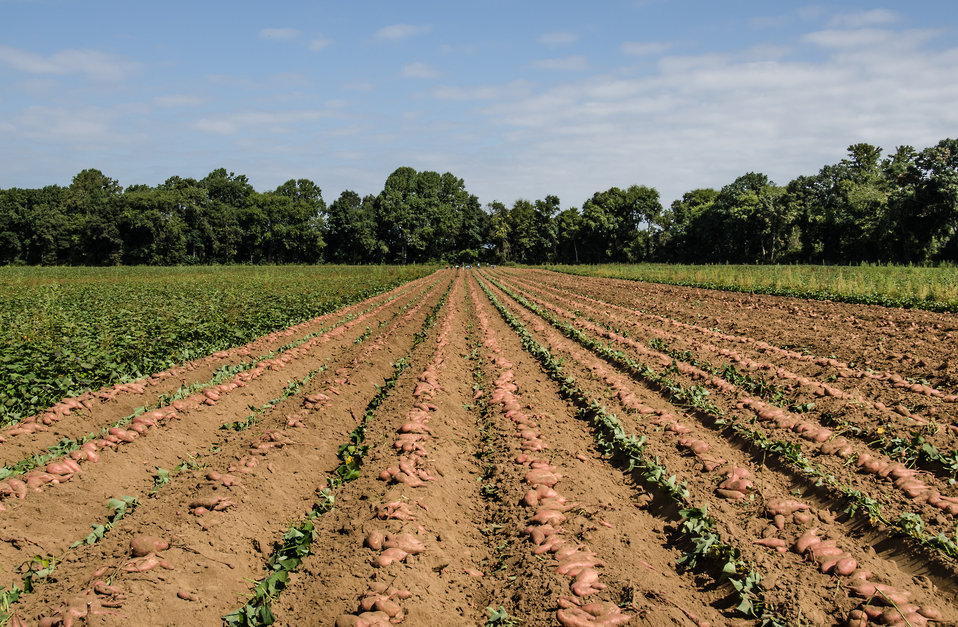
Harvested hand picked large sweet potatoes, at Kirby Farms in Mechanicsville, VA on Friday, Sept. 20, 2013. 200 acres of the farm are devoted to eggplant, spinach, beets, tomato, jalapeno peppers, melons and a variety of greens. Soybeans and small grain are grown on the remaining 300 acres. Using rotational crop practices allows Kirby Farms to double and triple crop yields. Wholesalers, who buy from this farm, sell the produce to major supermarkets in the Mid-Atlantic region, from North Carolina to Maryland. Restaurants in the local area prepare and serve the local bought produce to patrons in the Richmond, VA metropolitan area.